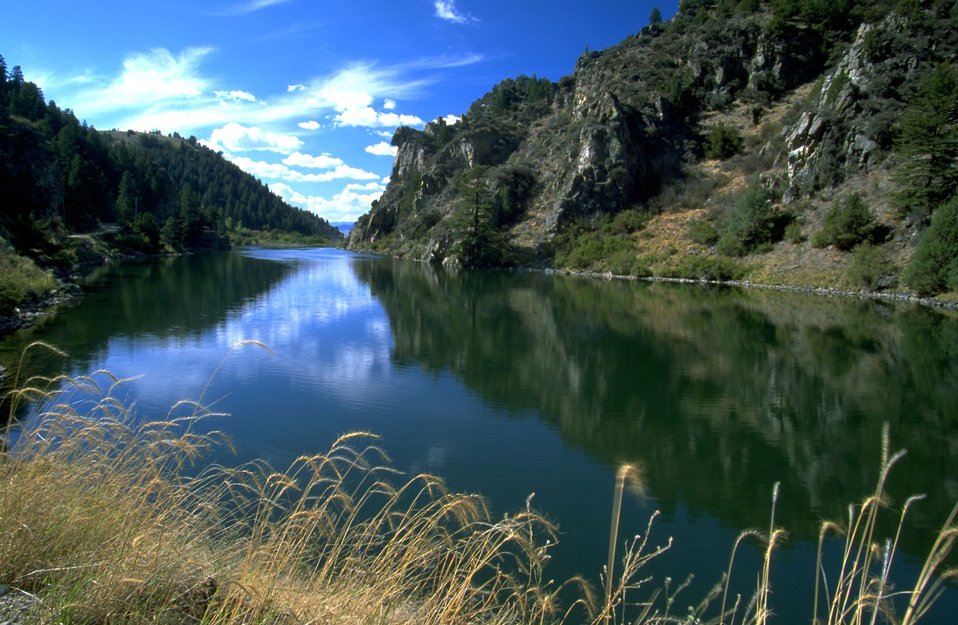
Scenic view of the Madison River with grass blowing in the foreground